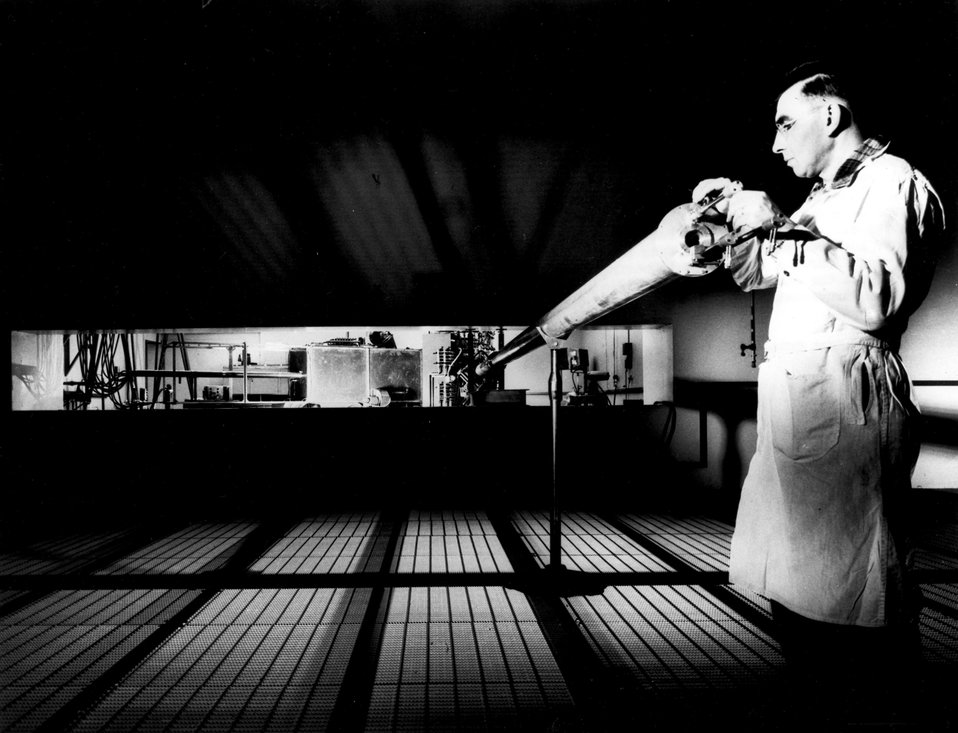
The 18-inch cyclotron, with its 30-foot beam pipe in the foreground.